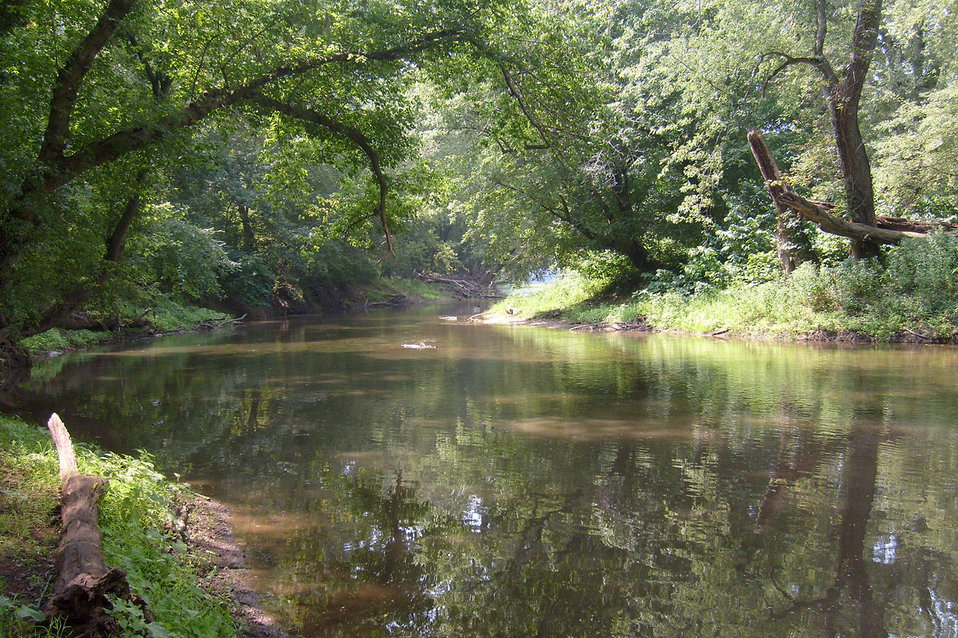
Lazy river

Potomac river.